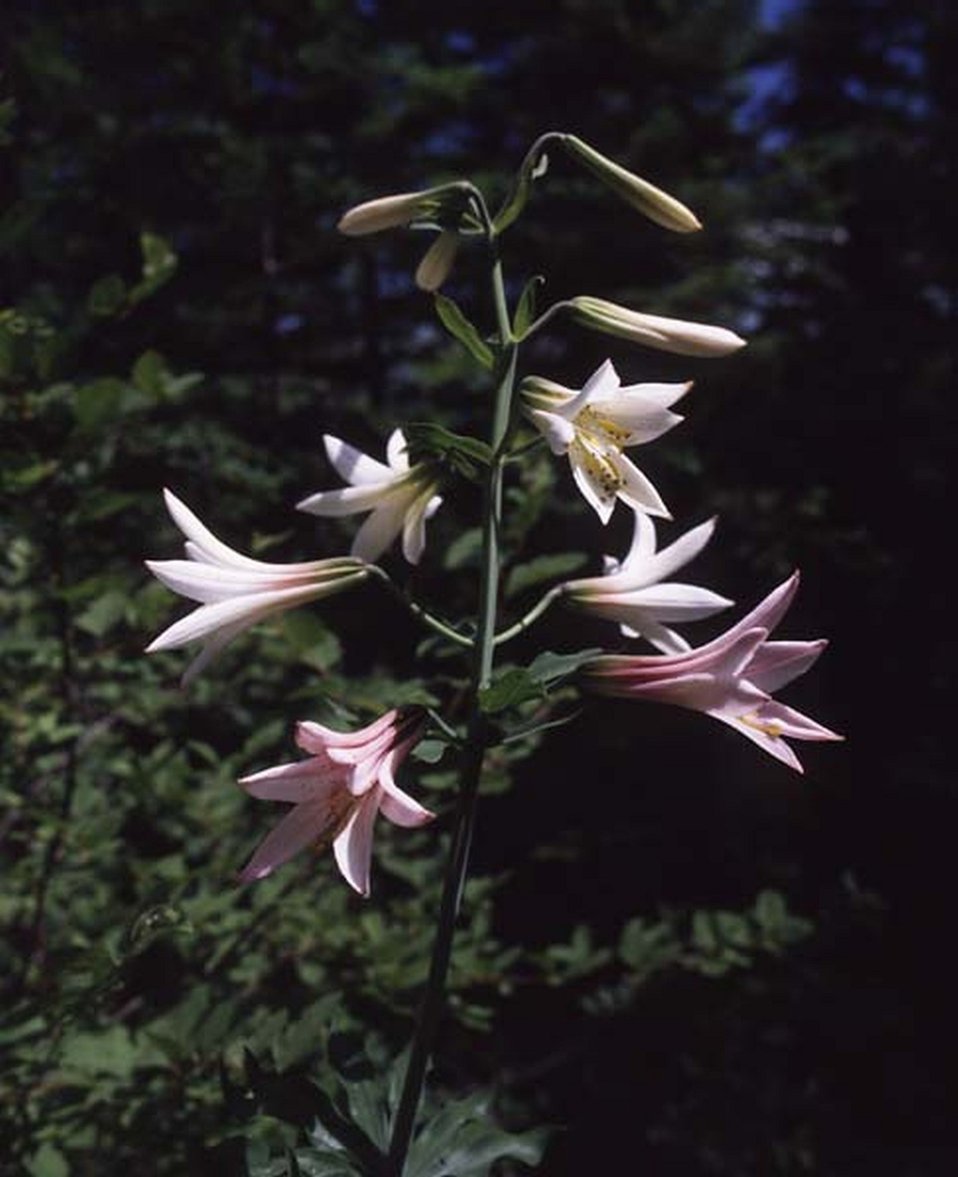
Medium shot of Lily.